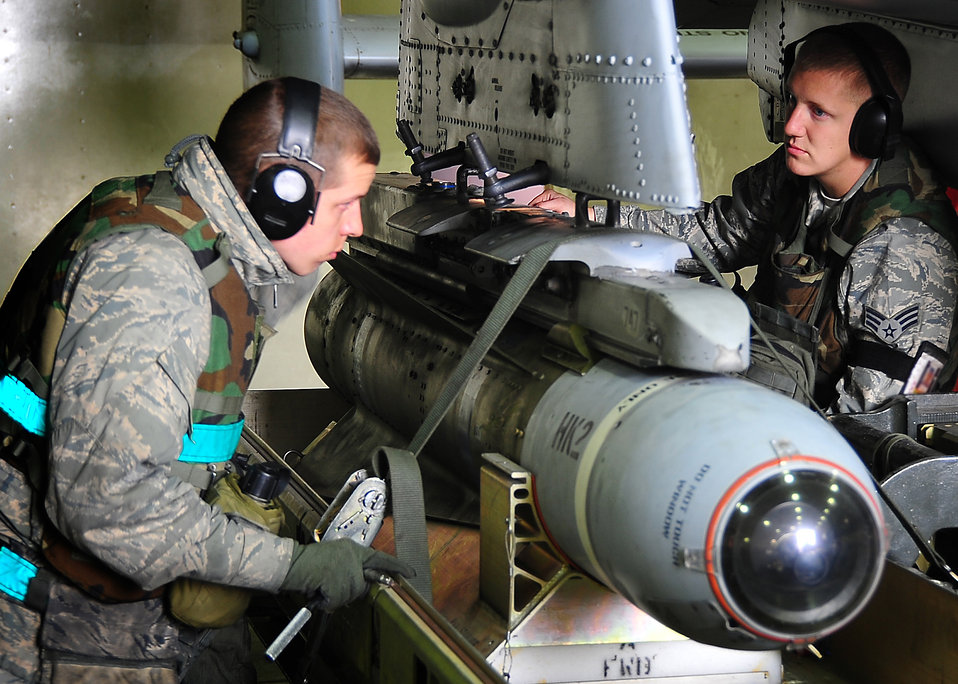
Practice makes perfect

Two Airmen from the 25th Fighter Squadron load a bomb onto an A-10 Thunderbolt II April 4, 2011, at Osan Air Base, South Korea, in preparation for a Pacific Air Forces Command operational readiness inspection.